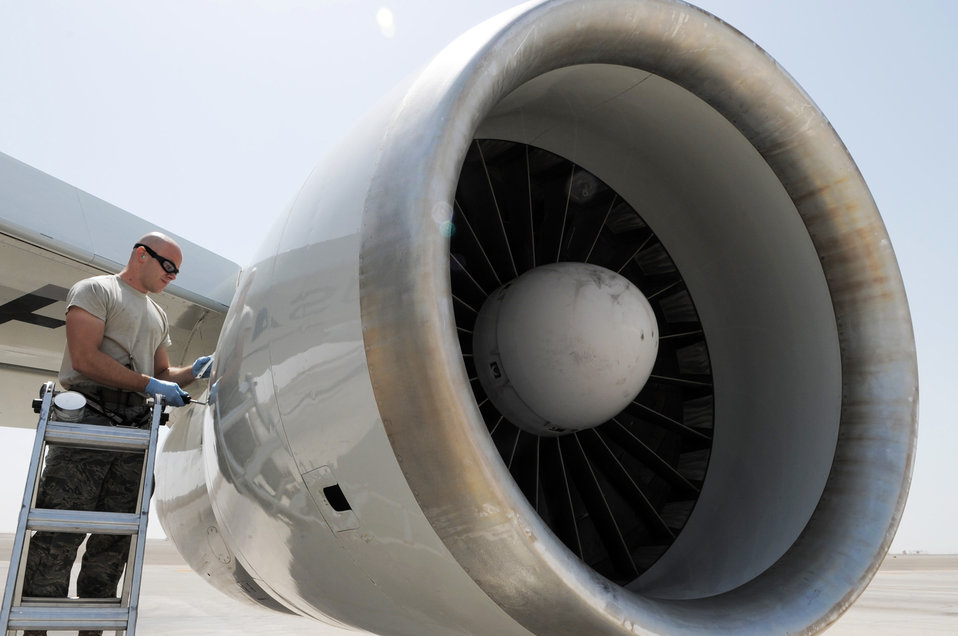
Keeping it in perspective

Staff Sgt. Joshua Gotbaum checks the engine of an E-3 Sentry March 23, 2010, during operations on the flightline at an air base in Southwest Asia. Sergeant Gotbaum is an aerospace propulsion technician with the 380th Expeditionary Aircraft Maintenance Squadron.